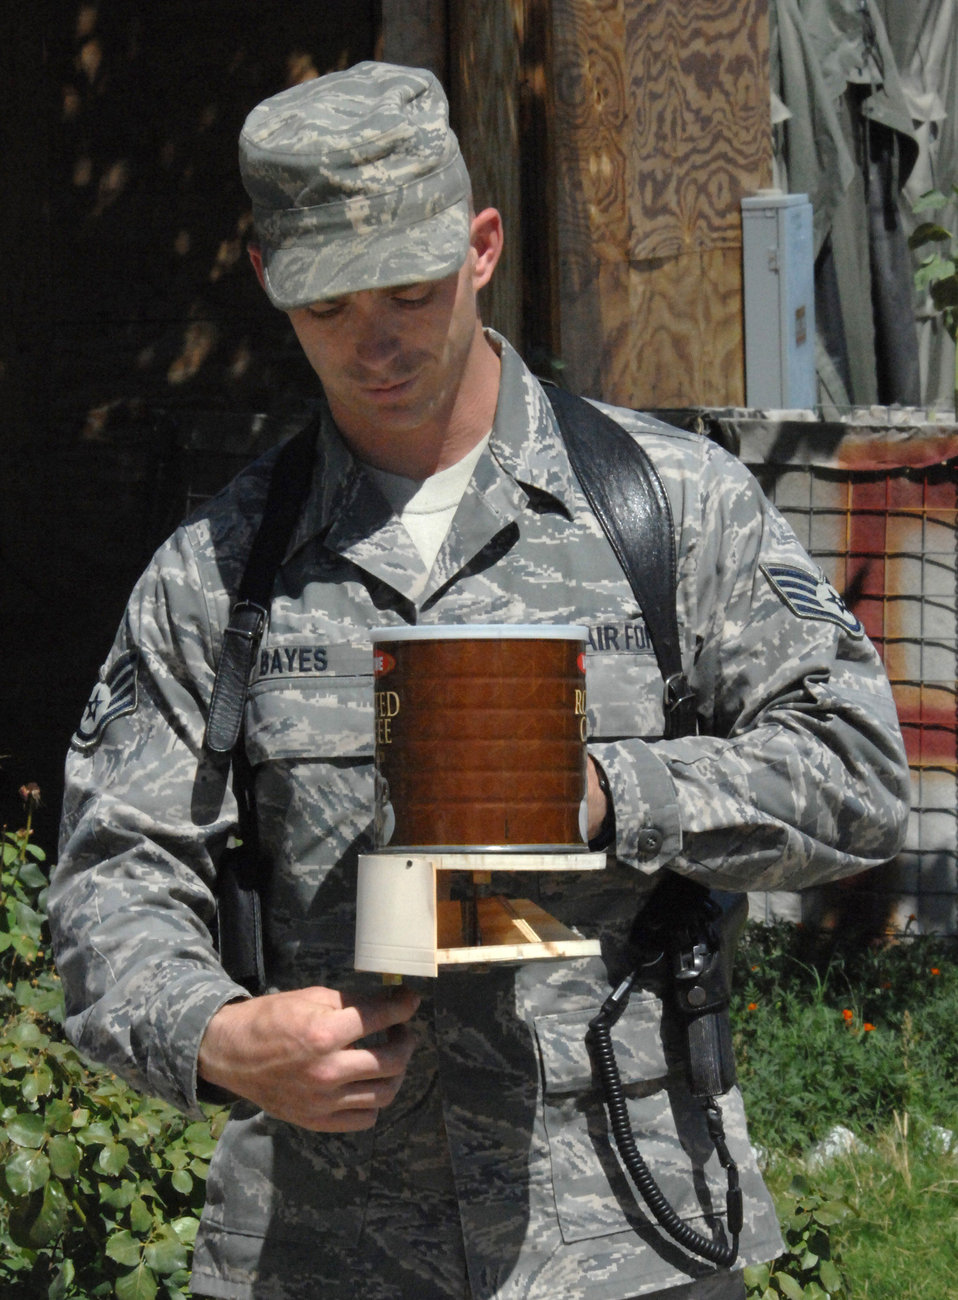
Small idea big difference

Staff Sgt. Tim Bayes demonstrates how to use a fertilizer spreader he designed and built for use by Afghan farmers. The spreader will potentially help increase crops by 15 to 20 percent annually. Sergeant Bayes is deployed from the Naval Construction Training Center in Gulfport, Miss., and is the Laghman Provincial Reconstruction Team Engineering NCO in charge.